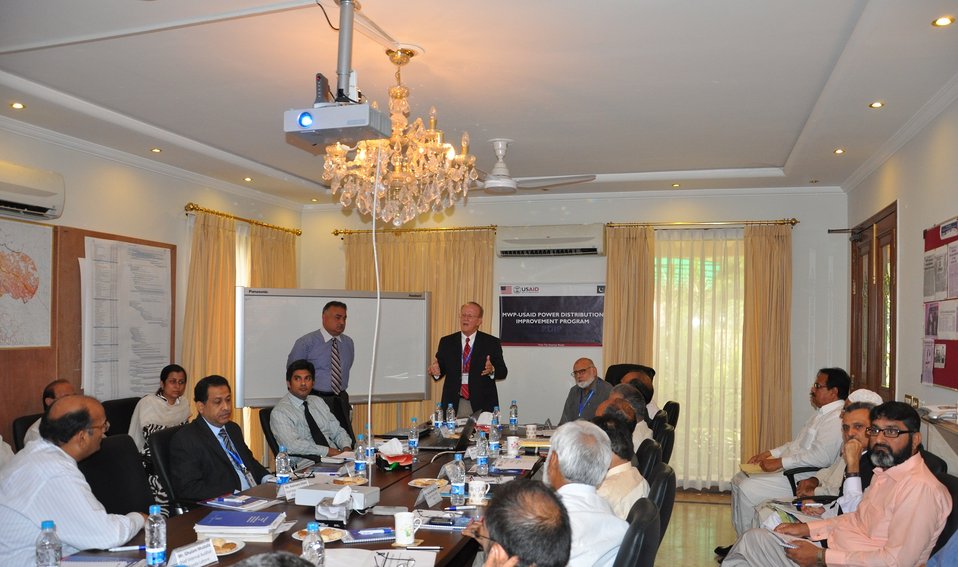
9 Sept, 2011 - Introduction of Internal Audit Manual for Power Distribution Companies (DISCOs)

Workshop in Progress:
USAID Power Distribution Program in a workshop on September 9, 2011 kicked-off the new internal audit manual for power distribution companies (DISCOs). The new internal audit manual shall improve DISCO operational efficiencies that will help reduce cost, improve revenue and internal controls, and by assisting prevention and detection of frauds and irregularities. Ms.Rukhsana Gilani (Chief Internal Auditor, PEPCO) and Mr.Gulam Mustafa (Chief Internal Auditor,WAPDA) also attended the event.